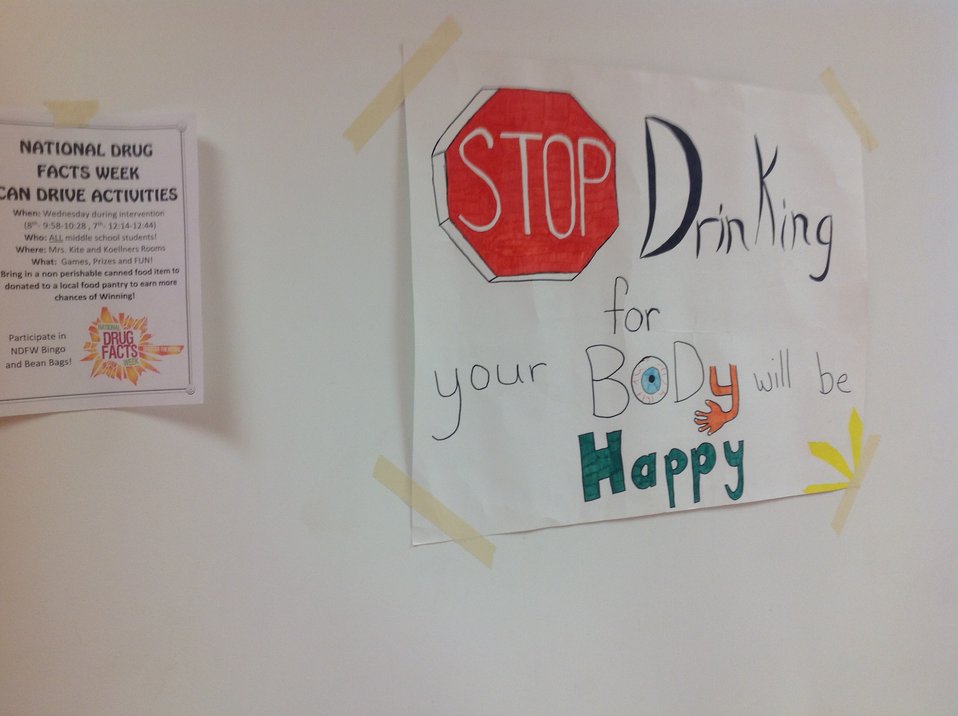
Getting the Word Out

Teenagers from the Van Buren County SAFE Coalition's, Youth Leadership Council (YLC) in Keosauqua, Iowa participate in various events during National Drug Facts Week, 2014.